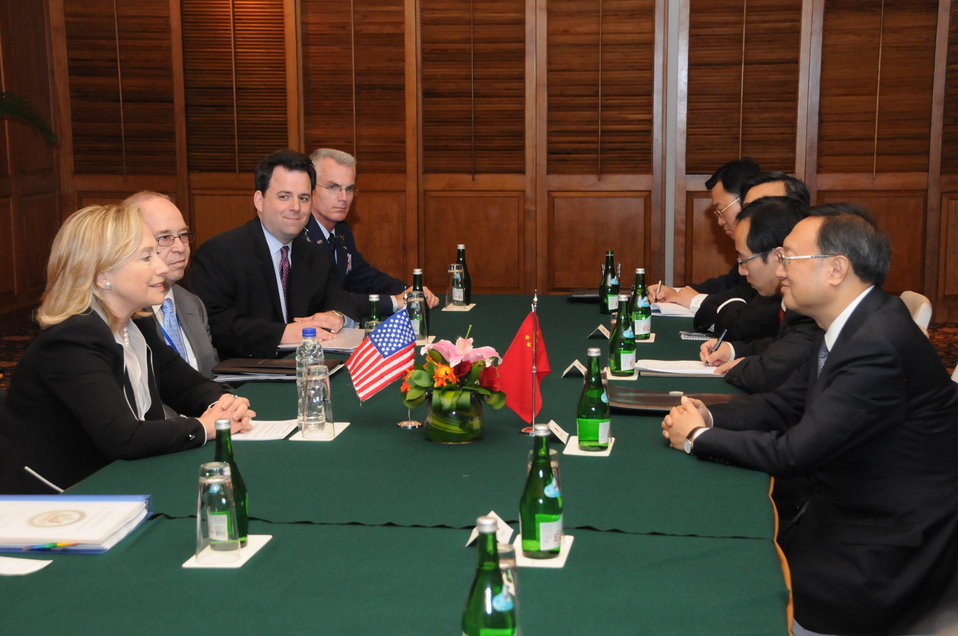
Secretary Clinton Holds a Bilateral Meeting With Chinese Foreign Minister Yang Jiechi

U.S. Secretary of State Hillary Rodham Clinton holds a bilateral meeting with Chinese Foreign Minister Yang Jiechi in Bali, Indonesia, on July 22, 2011. Seated on the left side, left to right, are: U.S. Secretary of State Hillary Rodham Clinton, U.S. National Security Council Director for Asian Affairs Daniel Russel, U.S. Assistant Secretary of State for Political-Military Affairs Andrew Shapiro, and General Paul Selva. Seated on the right side are: Chinese Foreign Minister Yang Jiechi, Interpreter Sun Ning; Chinese Assistant Minister of Foreign Affairs Liu Zhenmin, and Chinese Deputy Chief of Mission Xie Feng.